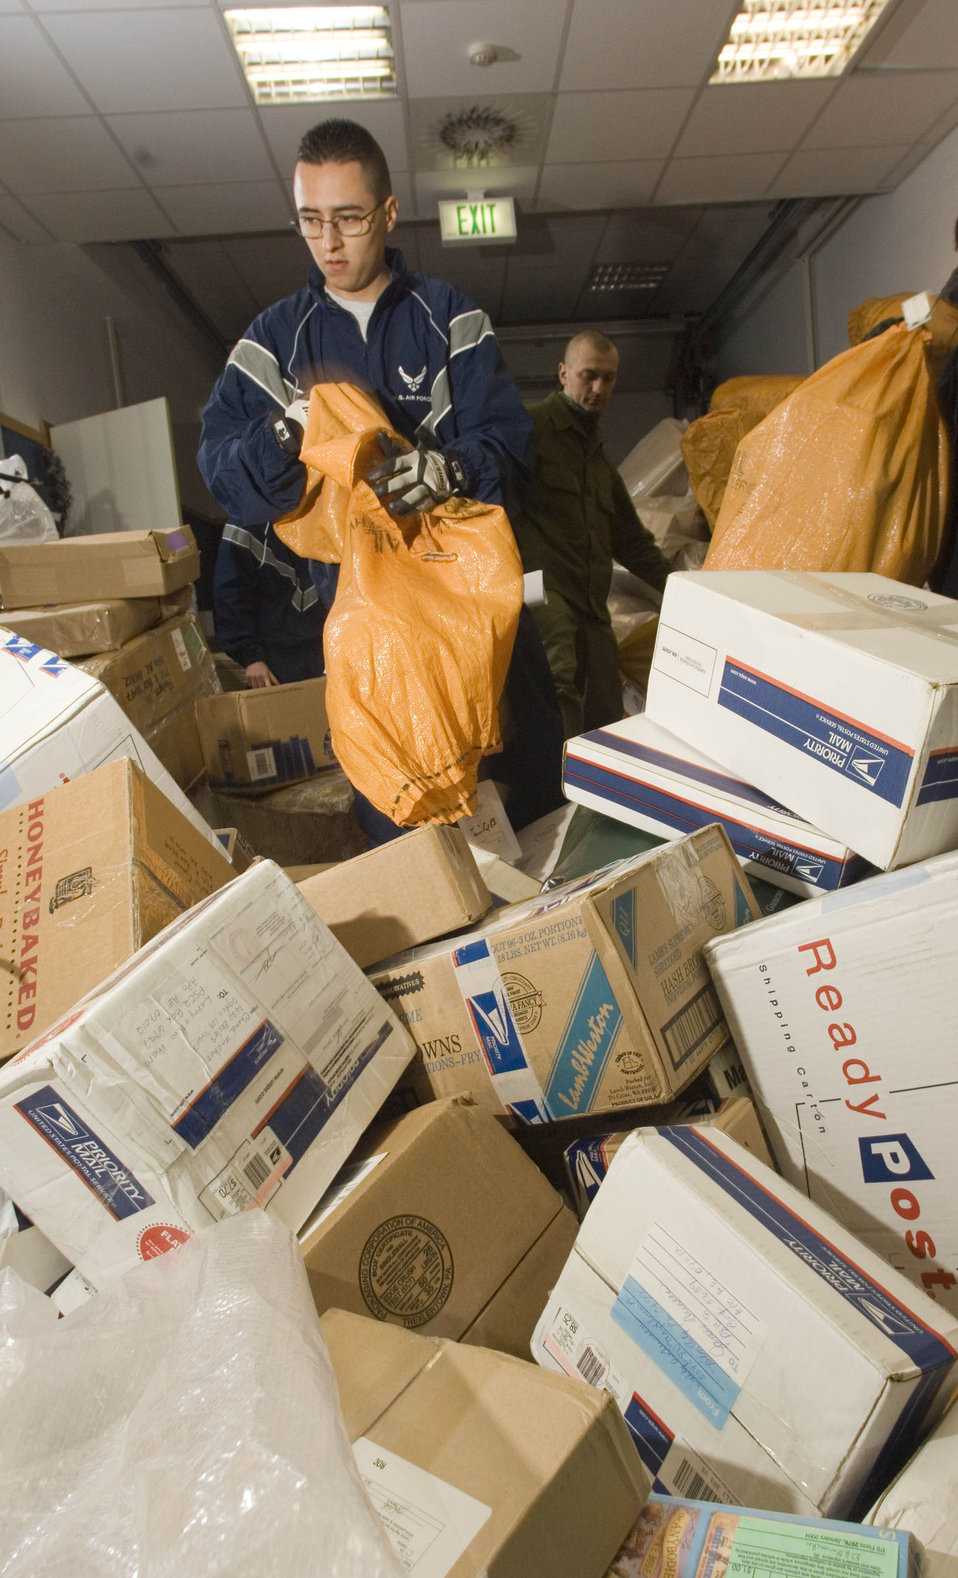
Postal service

RAMSTEIN AIR BASE, Germany (AFPN) -- Airman 1st Class Will Coppedge empties bags of mail at the North Side Post Office. Although Christmas has past, packages are still arriving here. Airman Coppedge is a postal clerk with the 435th Communication Squadron.